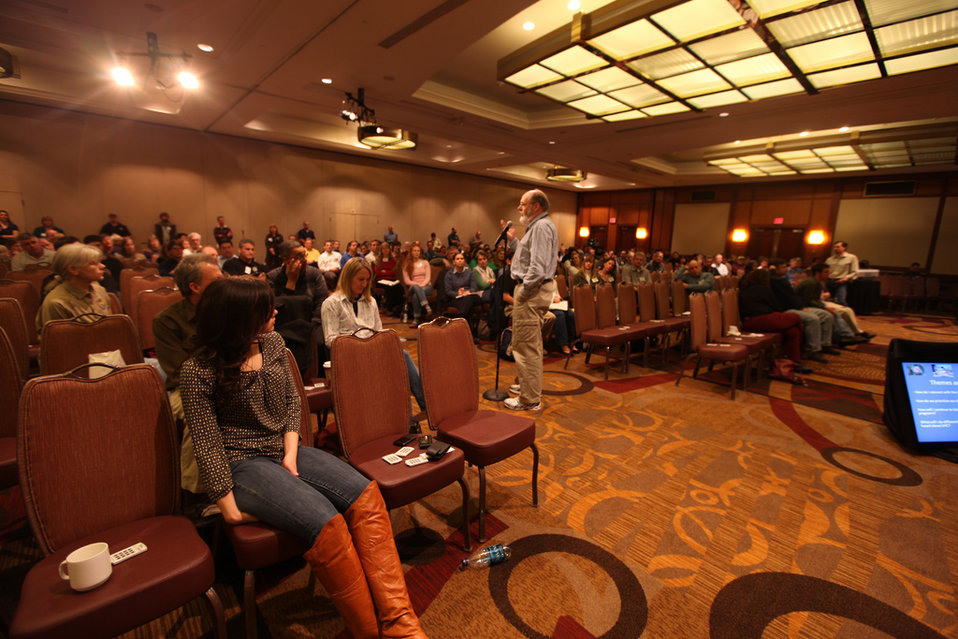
Town Hall

Biologist speaking at the Friday morning Town Hall session, where attendees were welcome to discuss their ideas on how to further landscape conservation.